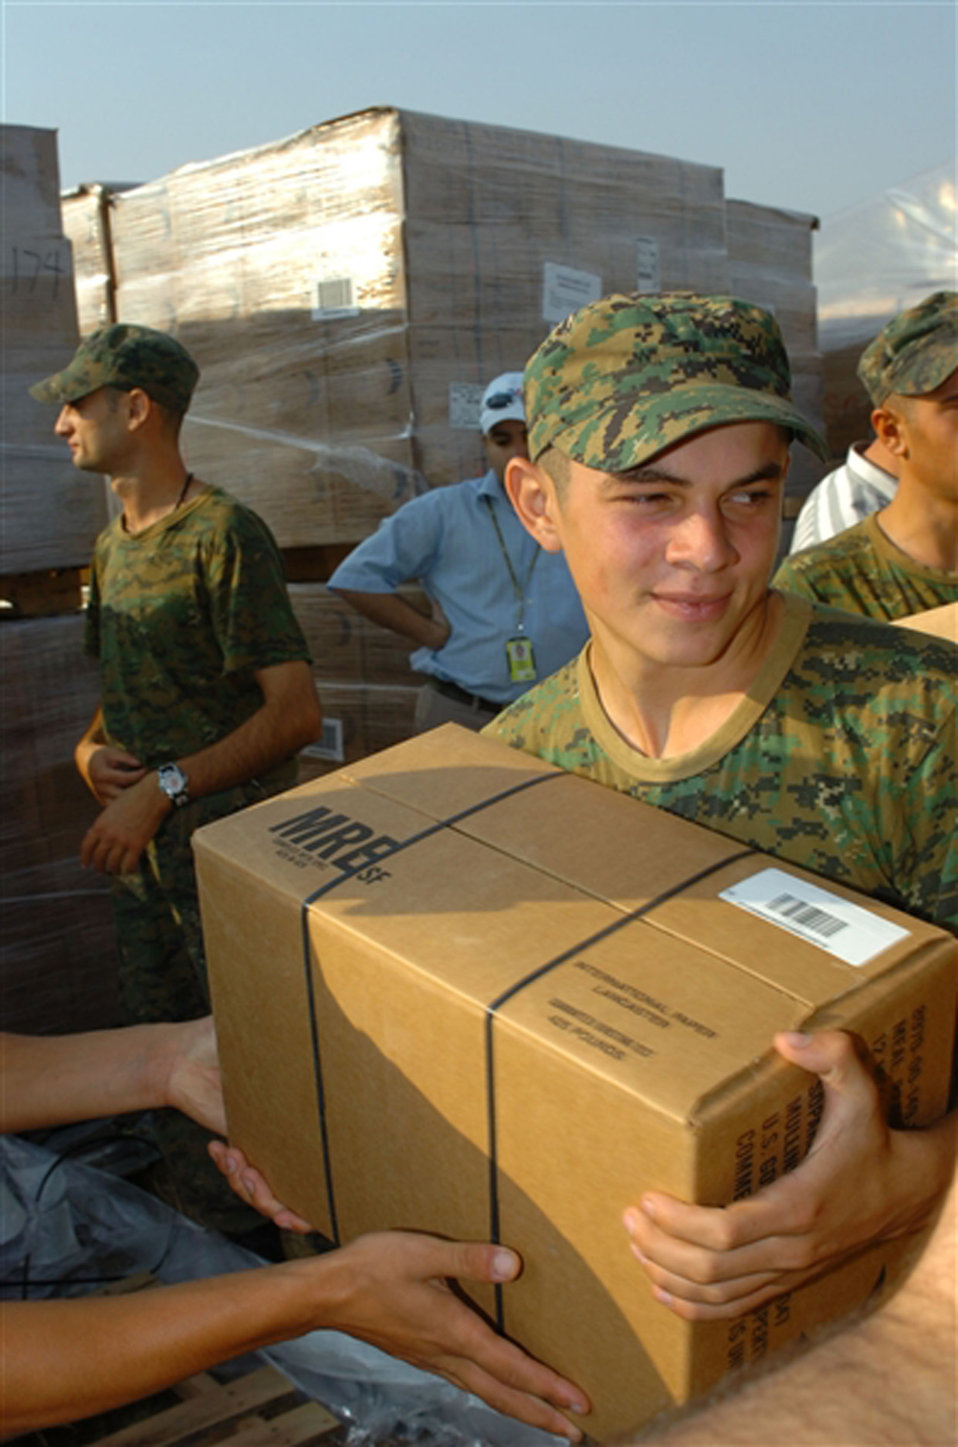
Aid to Georgia Surpasses Million-Pound Mark

Georgian soldiers, working with U.S. Soldiers, assist in delivery of humanitarian assistance supplies to the people of Georgia Aug. 21.